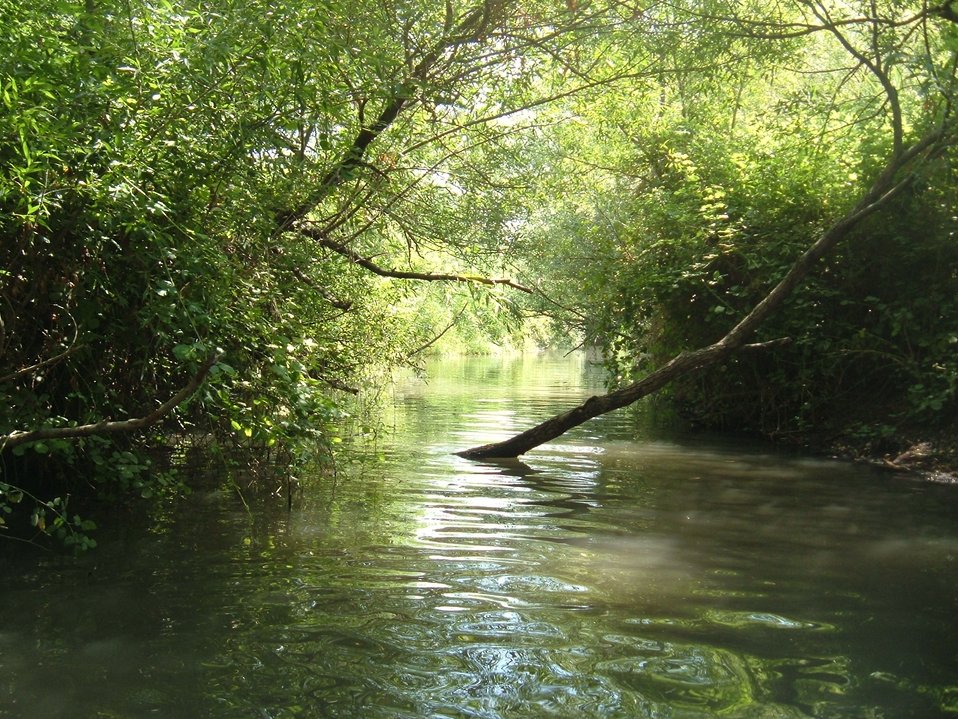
Majraseh section of Daliot stream in the Golan hights.קטע המג'רסה בנחל דליות ברמת הגולן